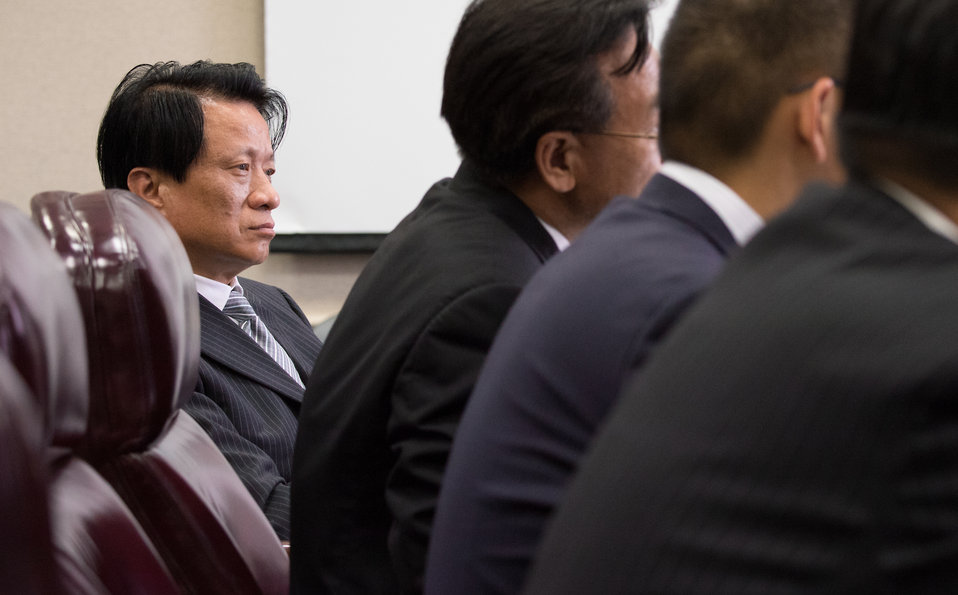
The People’s Republic of China Ministry of Agriculture (MOA) Department of Finance Director-General Li Jianhua, left, listens to U.S. Department of Agriculture (USDA) Under Secretary for Natural Resources and Environment (NRE) Robert Bonnie and other USDA leaders at the USDA headquarters Whitten Building, in Washington, D.C., on Friday June 13, 2014. The Chinese Agricultural Delegation is lead by Vice Minister H.E. Zhang Taolin, center.